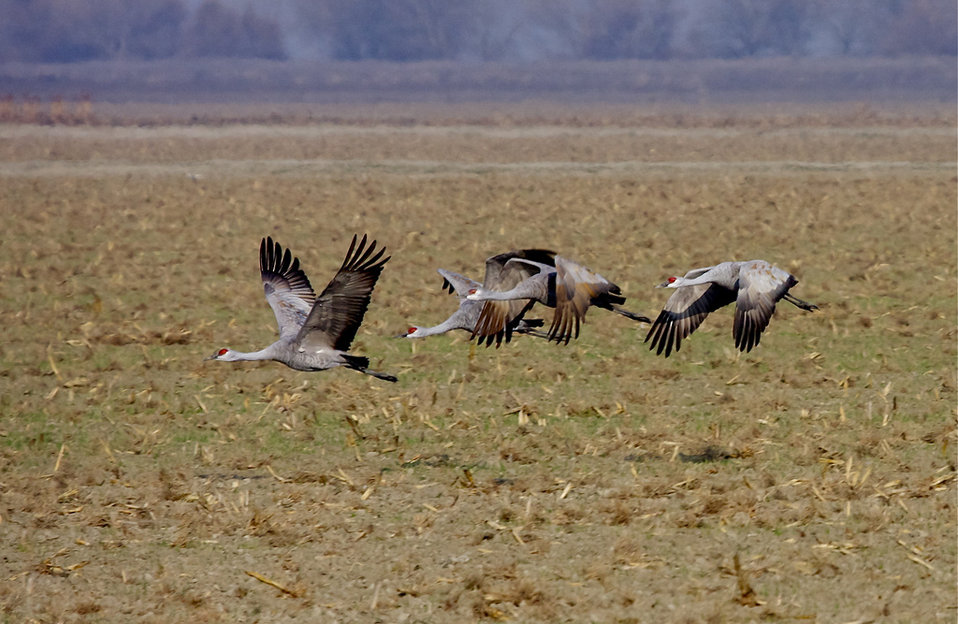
sandhill cranes

Pixley National Wildlife Refuge, CA